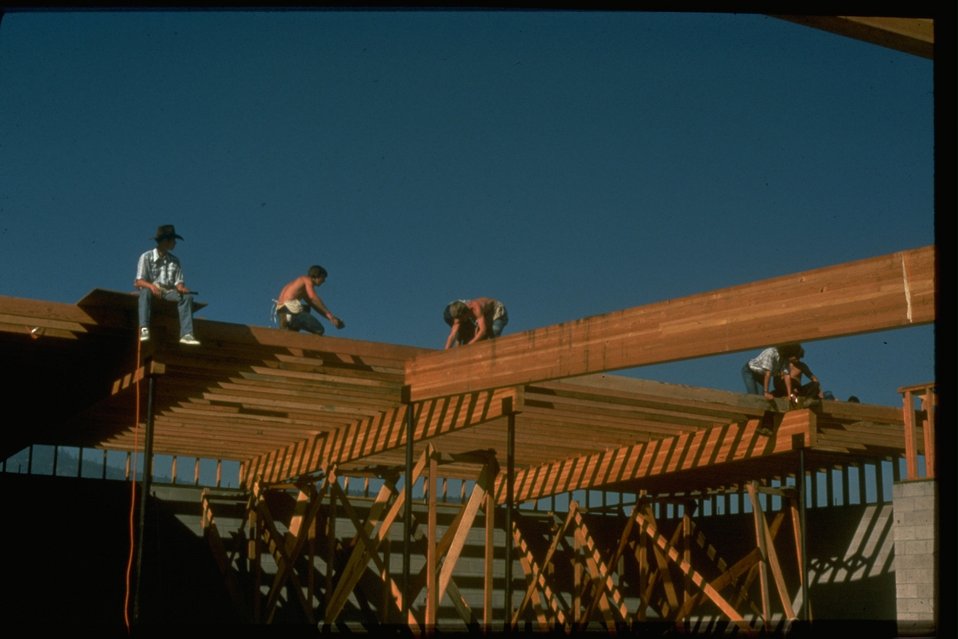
Wood uses: Construction framing.